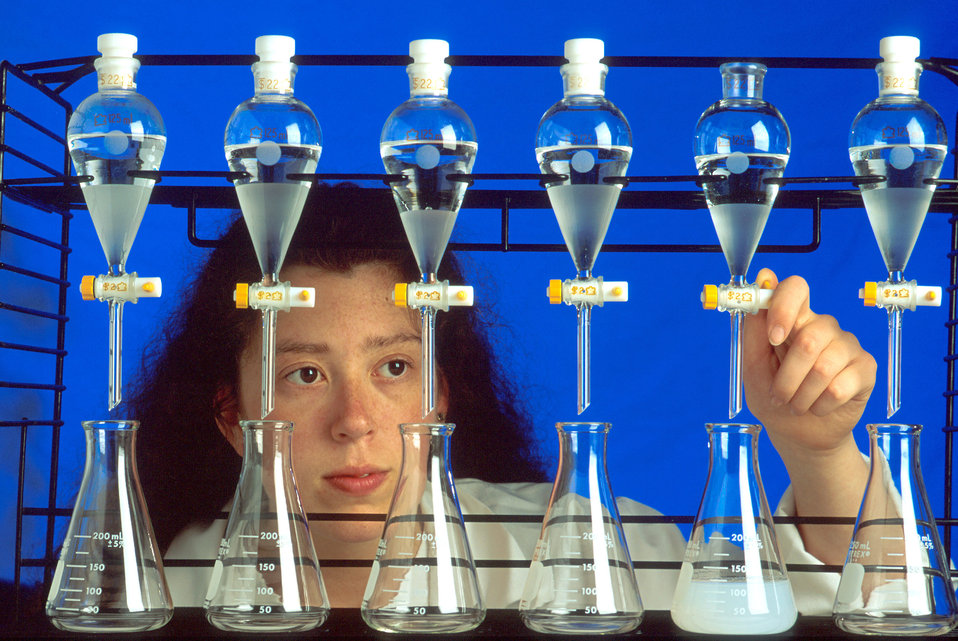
U.S. Department of Agriculture (USDA) Agricultural Research Service (ARS) biological laboratory technician Elizabeth Denvir extracts samples for total lipid fatty acid composition.